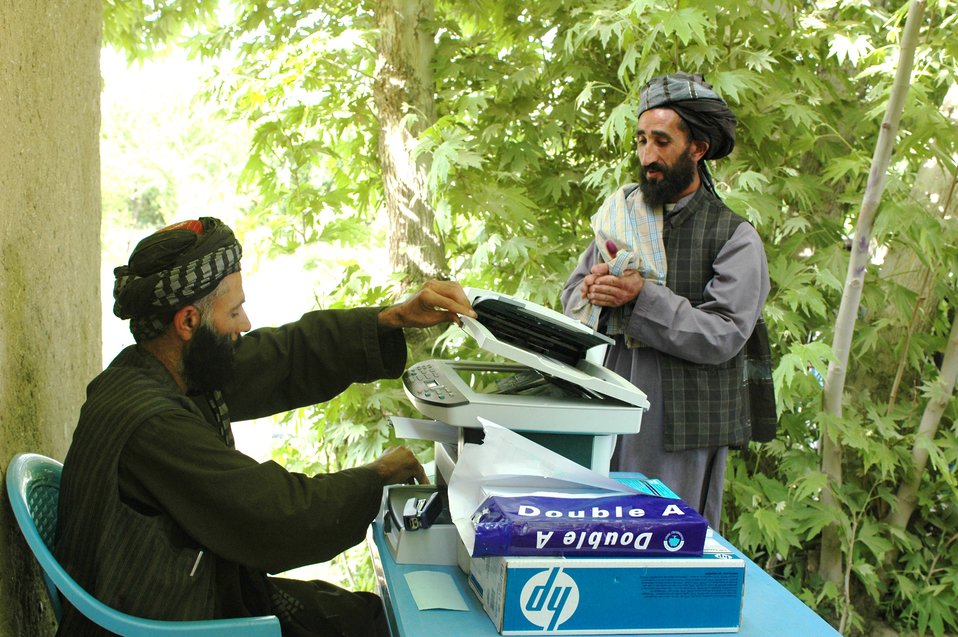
Dr Shah Visits Argandab April 10, 2010